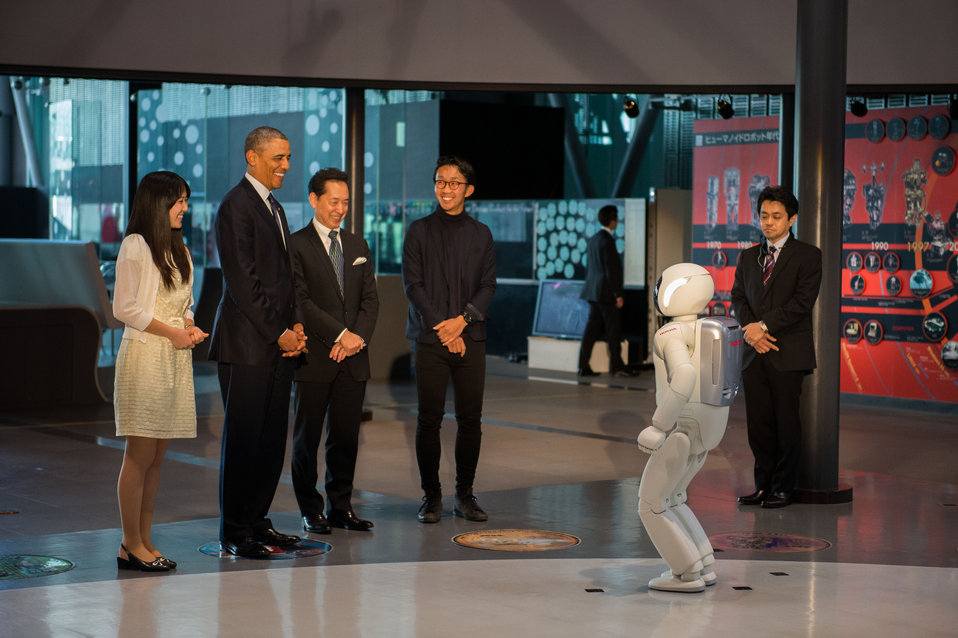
President Obama Watches ASIMO the Humanoid Robot

U.S. President Barack Obama, with Executive Director Mamoru Mohri of the Miraikan (the National Museum of Emerging Science and Innovation) and Japanese students, enjoys the performance of ASIMO the humanoid robot during his visit to the museum in Tokyo, Japan, on April 24, 2014.